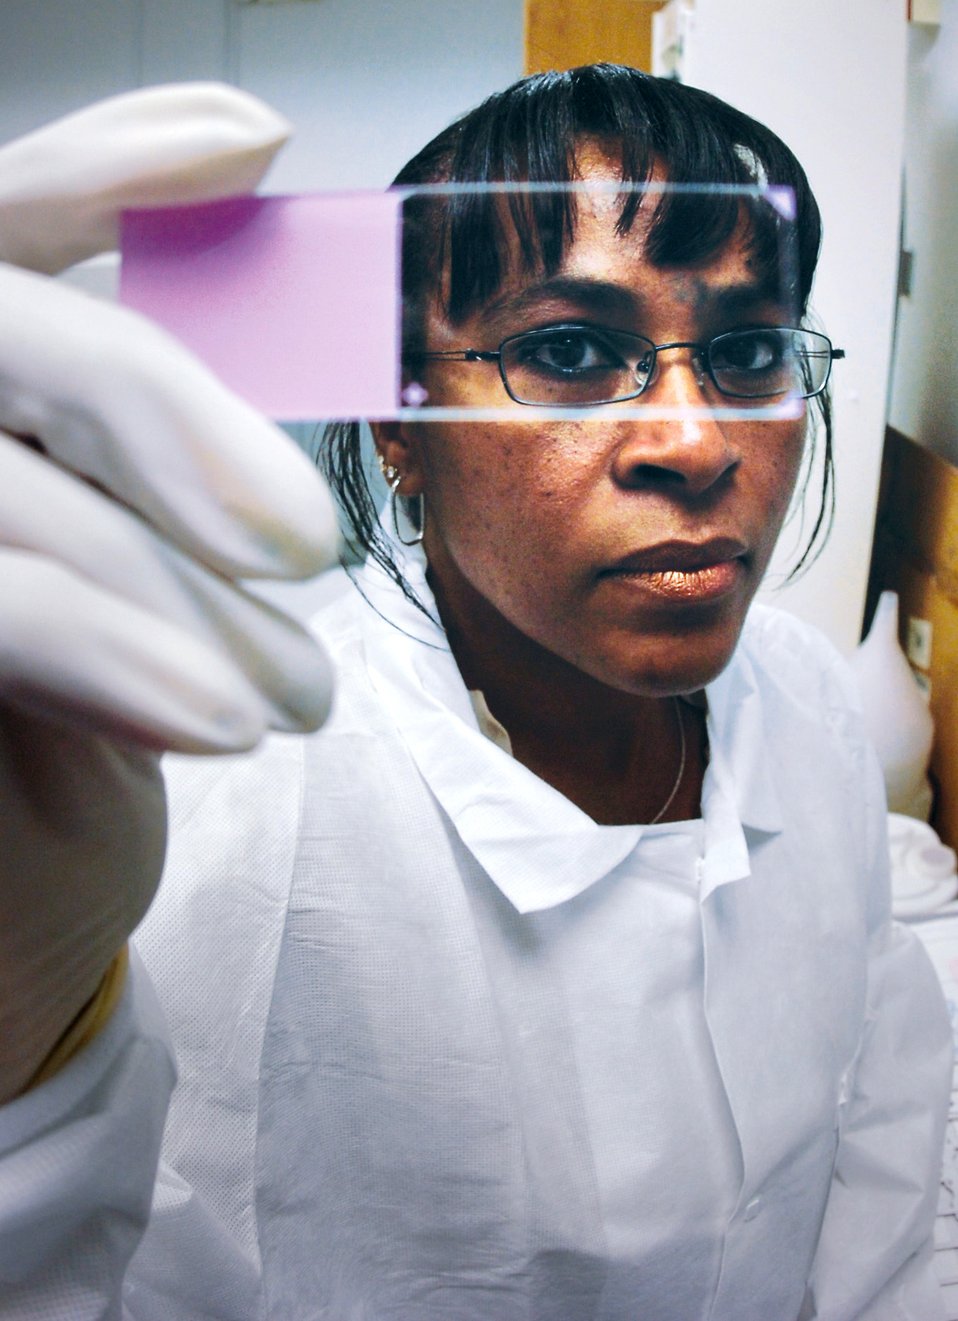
Histopathology provides rapid diagnosis

Helena Smalls views a slide of a fungus specimen. Ms. Smalls is a histopathology technician with the 89th Medical Support Squadron pathology department at Andrews Air Force Base, Md.